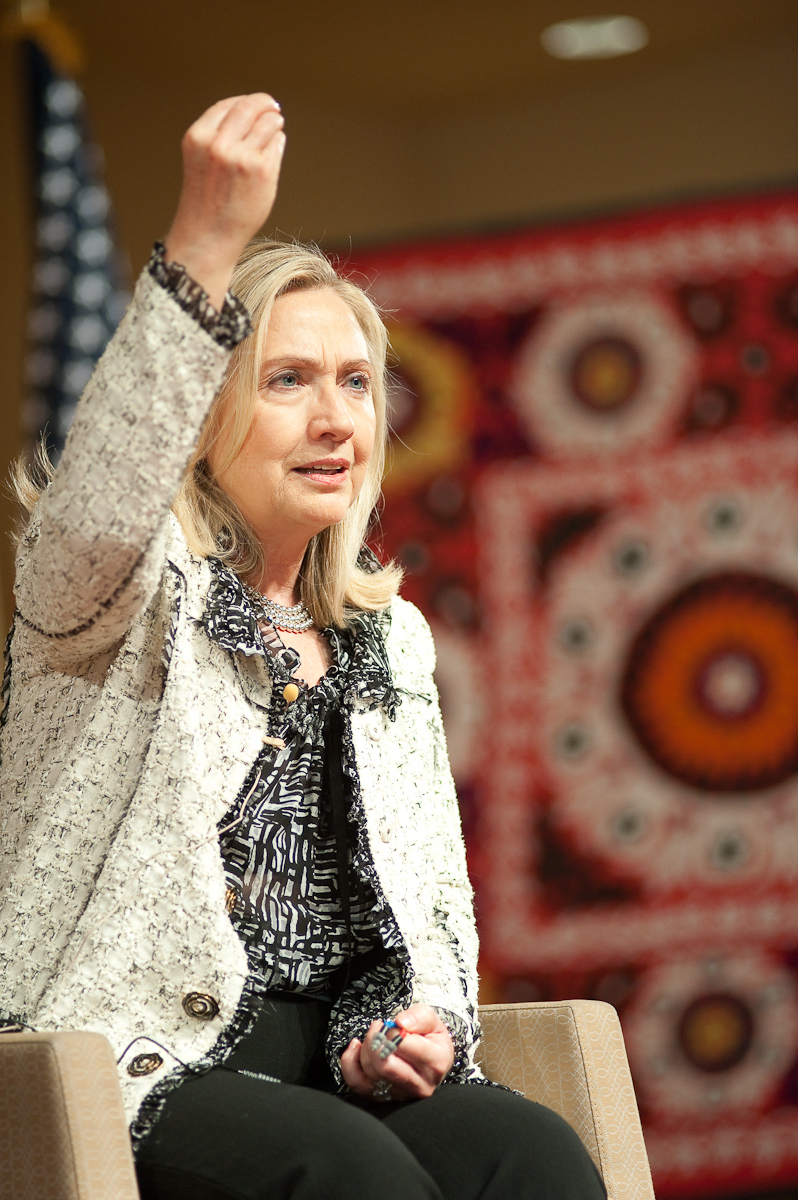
Secretary Clinton Holds a Town Hall

U.S. Secretary of State Hillary Rodham Clinton holds a town hall with civil society in Dushanbe, Tajikistan, on October 22, 2011.